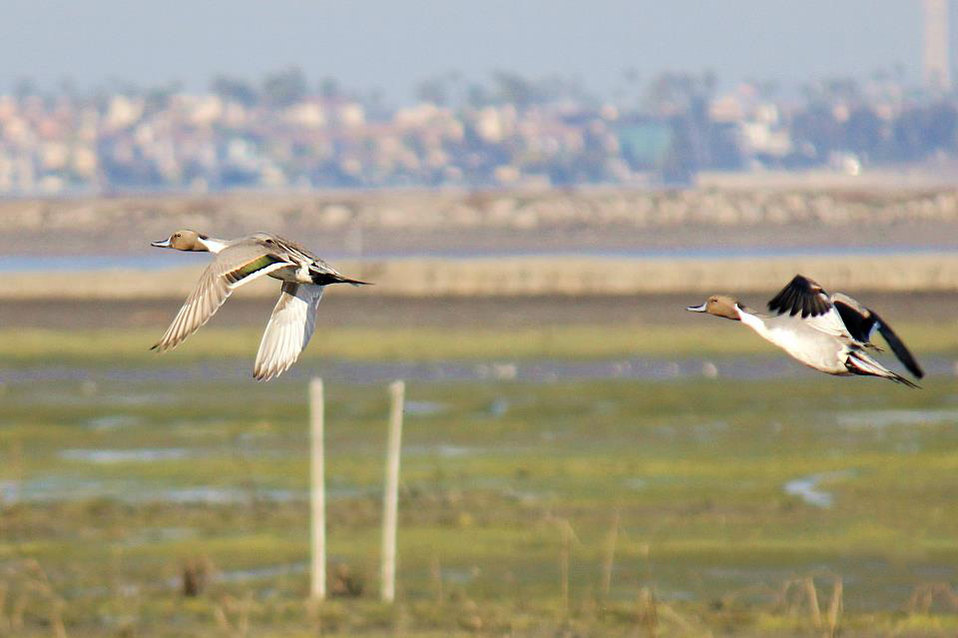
Northern pintails soar over Pond 10

'Pond 10' is located on the San Diego Bay NWR, and also the location of the newly restored salt ponds from the South San Diego Bay Restoration & Enhancement Project, completed in fall of 2011.